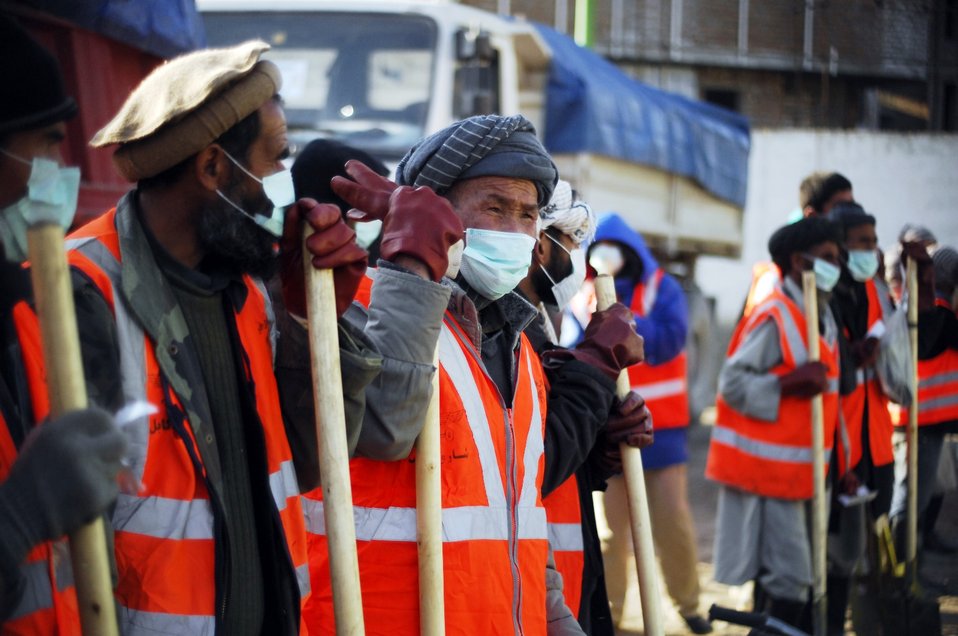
Care13